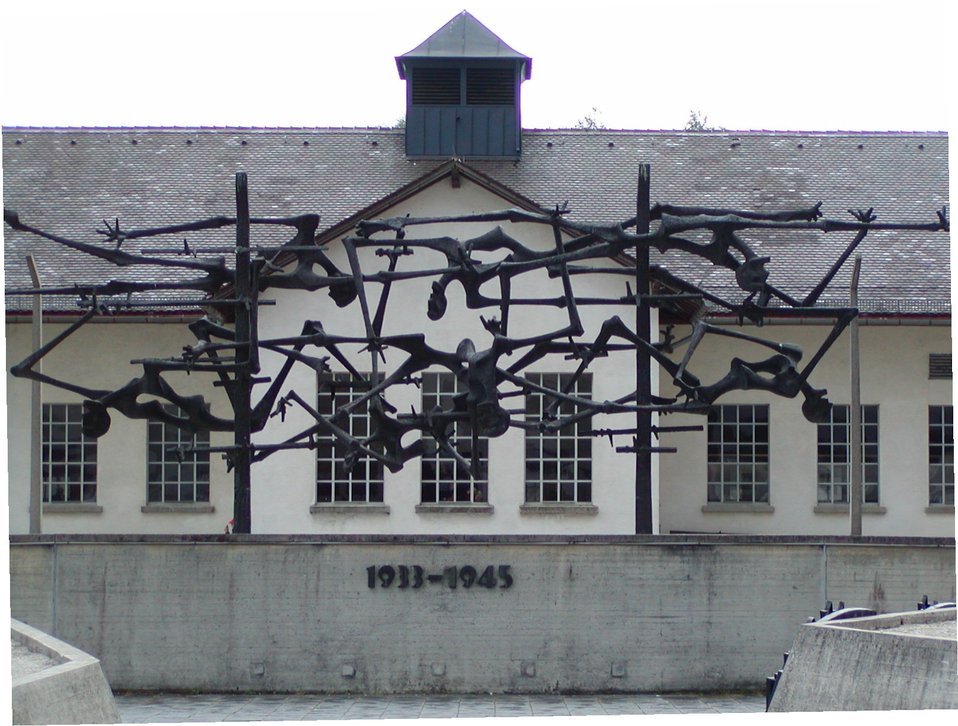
Dachau Conentration Camp Main Building.